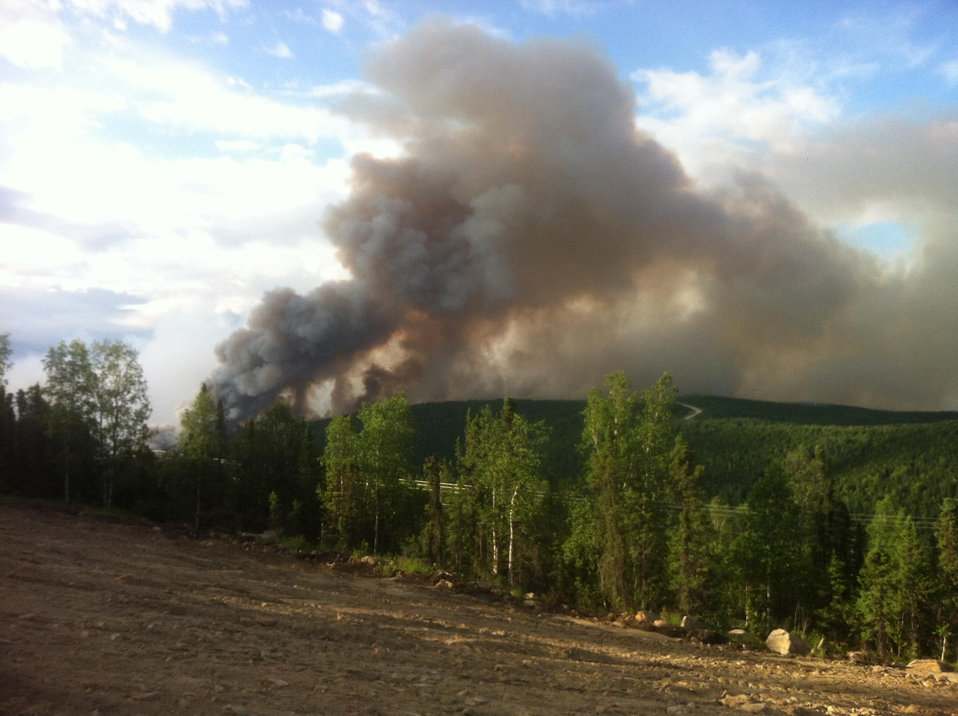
The Stewart Creek Fire located 25 miles east of North Pole, AK began on Jun. 19, 2013 due to human causes and has consumed an estimated 85, 475 acres. The fire is approximately 57% contained.